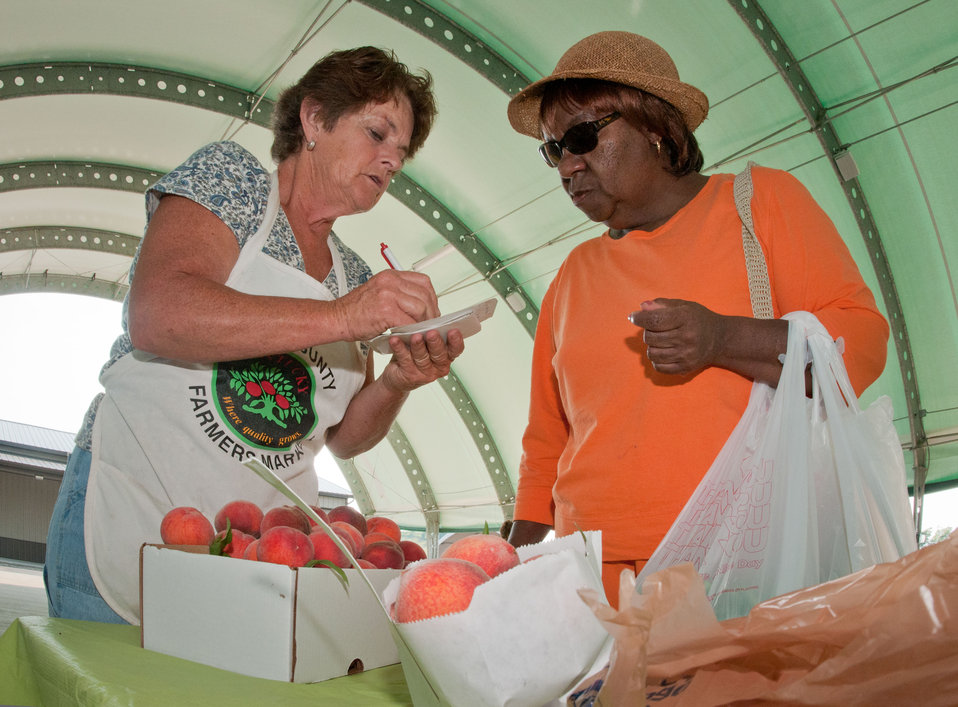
Mary 'The Peach Lady' Manley (left) is happy to share a peach pie recipe and make an extra special deal for Janice Potts (right) who used her Senior Farmer's Market Nutrition Program check at the Bath County Agricultural Education and Marketing Center, Owingsville, KY, on Friday, July 15, 2011. When Ms. Potts's four dollar Program check, got $20's worth of beans, 3/4 peck of of 'uglies' and some pretty Whopper heirloom tomatoes that day.The Center was the recipient of a $400,000 Rural Business Enterprise Grant. It has given farmers and producers from Bath and surrounding counties the opportunity to manufacture and market their locally grown and locally produced value-added and “Kentucky Proud” branded products, including but not limited to, fresh produce, artisan crafts and specialty food products. The Center is open year-round and allow residents to sell products in four different retail categories, including Kentucky products, regional crafts, “green” groceries and bakery/deli. Several producers expressed their gratitude for Rural Development’s assistance in making the center a reality. The project was made possible through funding the American Recovery and Reinvestment Act of 2009 enacted by the 111th United States Congress in February 2009 and signed into law on February 17, 2009, by President Barack Obama.